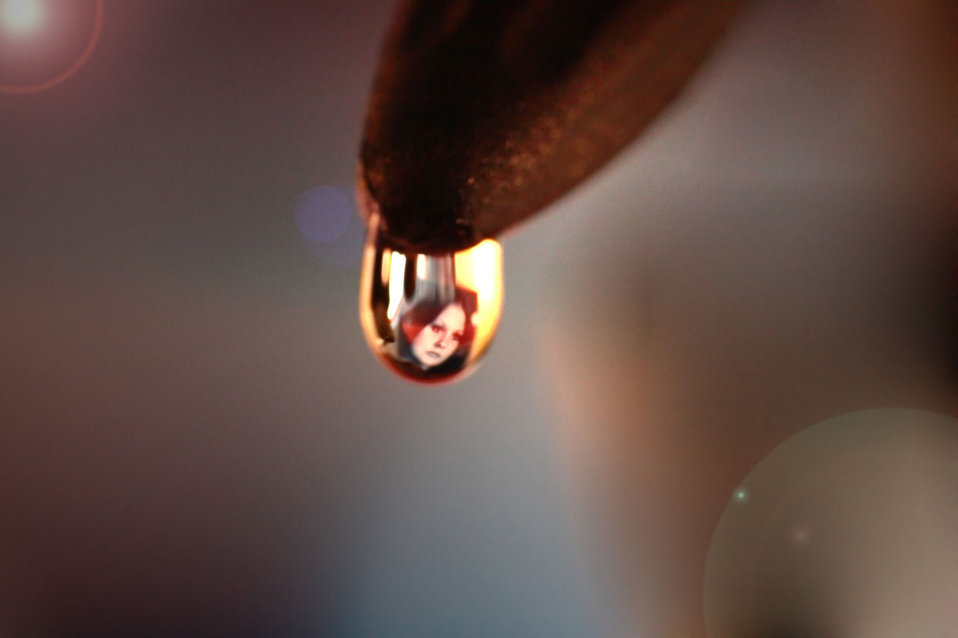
Lady in the water

My favorite photograph of my wife refracted in a drop of water. she passed away on the 4th of november, at the age of 23. i miss her so much.....